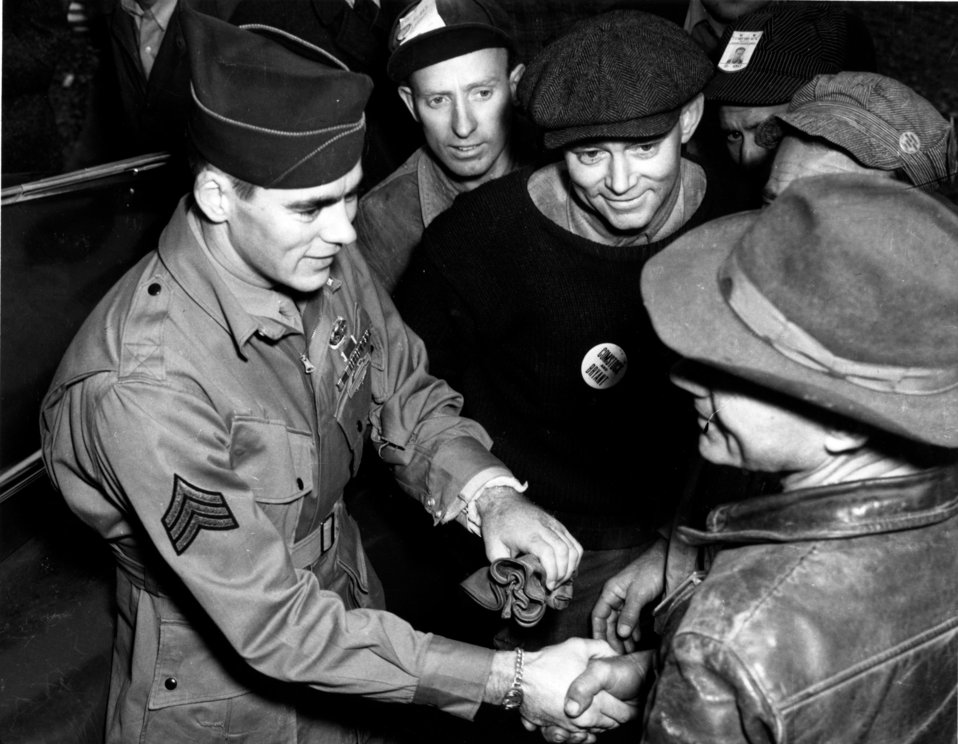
Army Activity at Oak Ridge